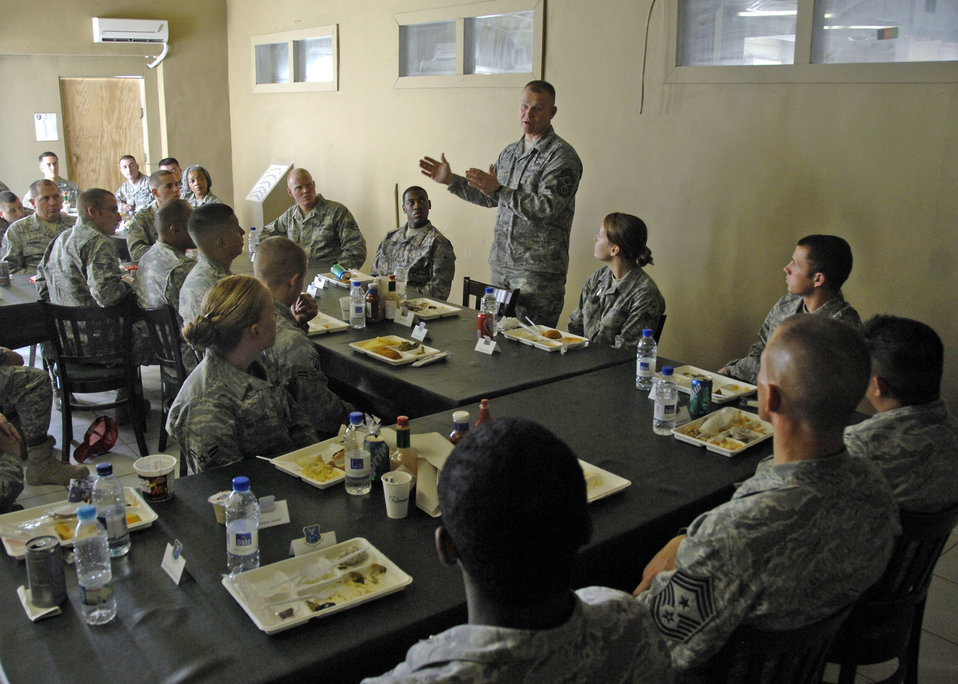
CMSAF visits Kandahar Airmen

Chief Master Sgt. of the Air Force James A. Roy speaks to Airmen explaining how experiences in a combat environment will benefit them in their future careers Nov. 30, 2009 at Kandahar Airfield, Afghanistan. Chief Roy also took time after the luncheon to answer Airmen's questions about current events and future plans for the Air Force.